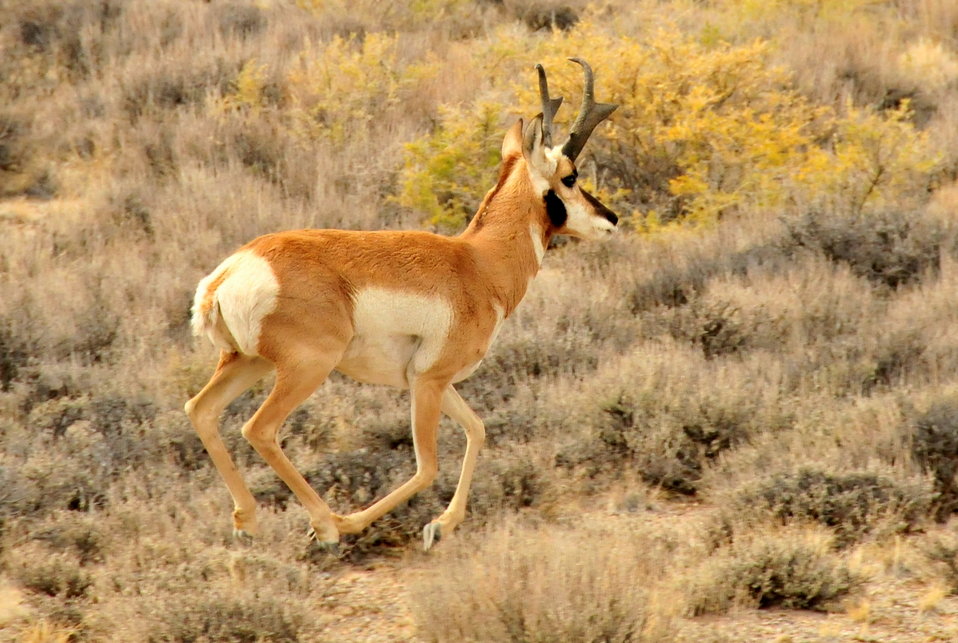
Pronghorn Buck Seedskadee NWR 5